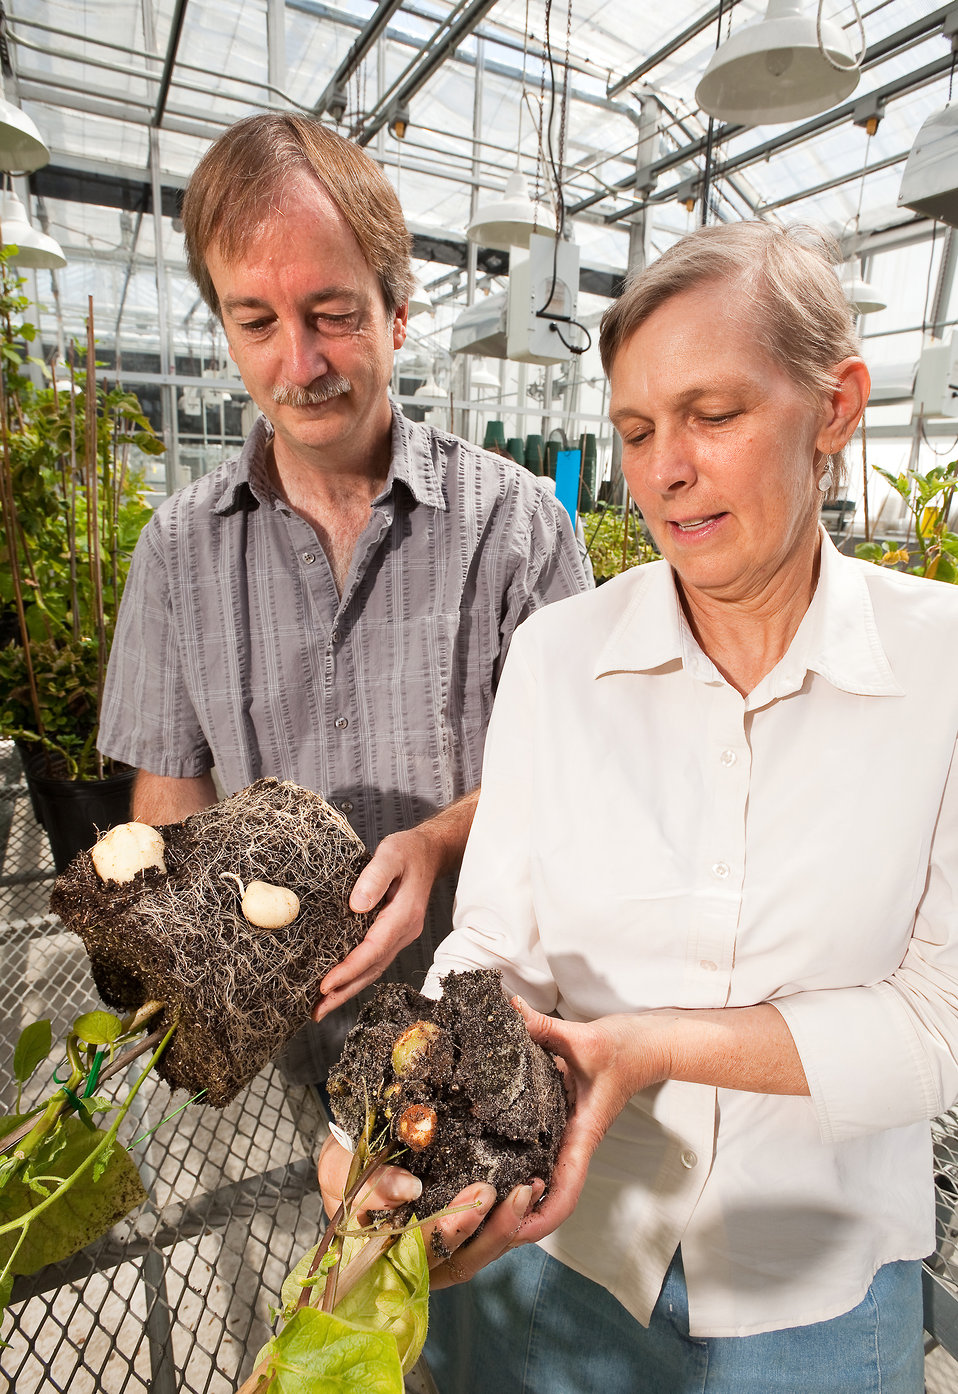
U.S. Department of Agriculture (USDA), Agriculture Research Service (ARS) plant pathologists Rick Jones and Leslie Wanner screen both traditional and genetically enhanced potatoes for disease resistance on July 26, 2012. The potatoes on the left are uninfected (clean and round), whereas the ones on the right are infected (dark and misshapen).